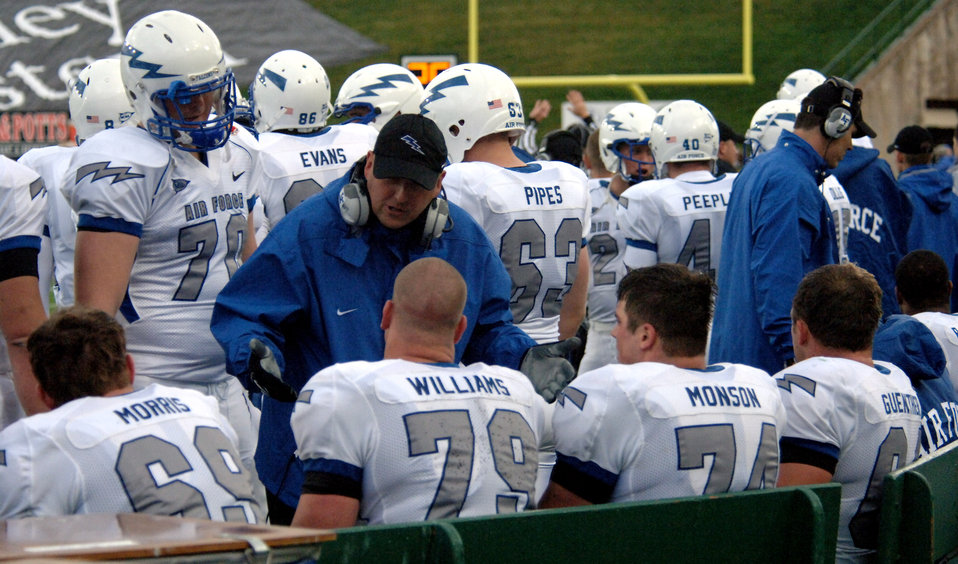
Football: Falcons, Hall run roughshod over CSU

Air Force offensive line coach Clay Hendrix encourages his troops on the sideline during the Falcons' 45-21 win over the Colorado State Rams Oct. 13 at Fort Collins, Colo. The bluesuiters' O-line created holes for Air Force runners to total 385 yards on 69 carries.